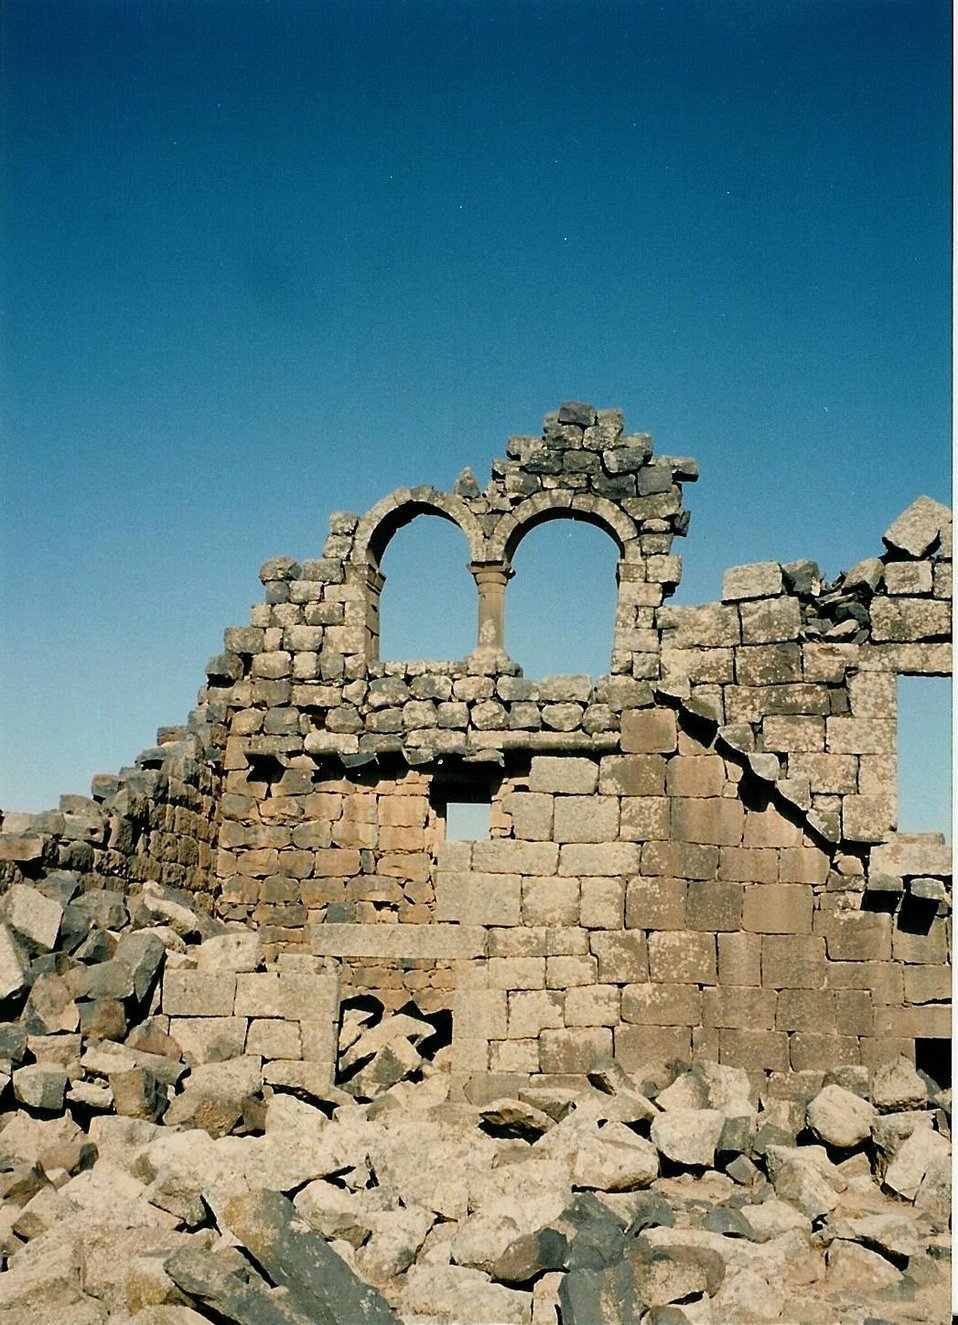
Photograph of House XVIII taken in Umm el-Jimal, Jordan in the summer of 1993.